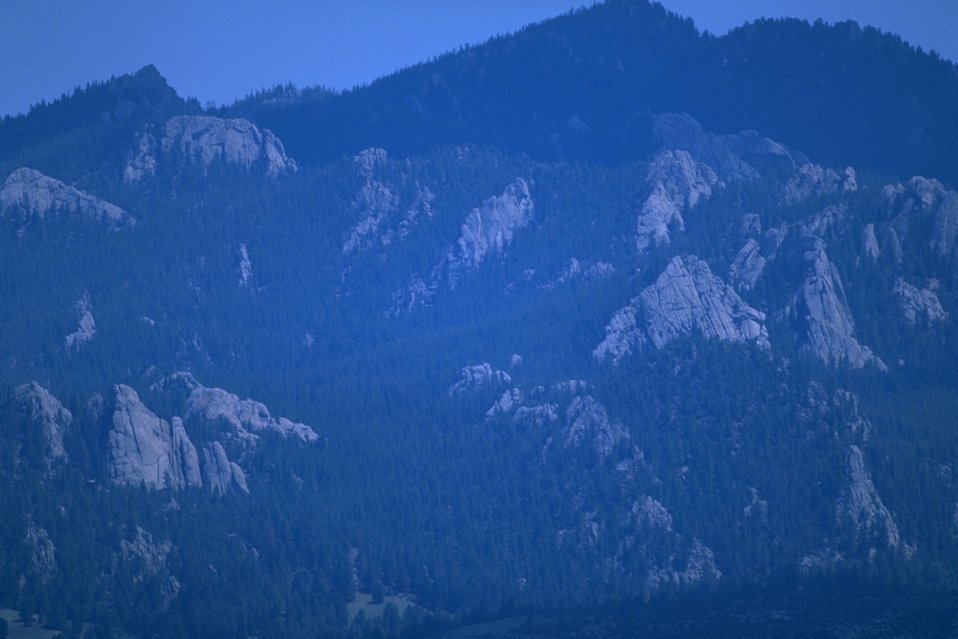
Rock formations along a mountainside